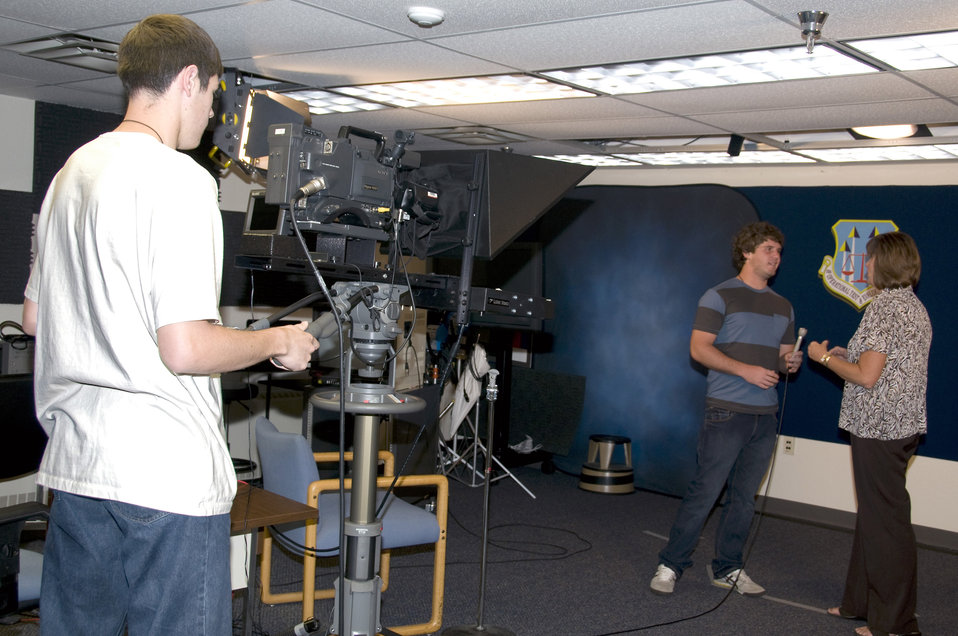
AFOTEC launches student intern program

At Kirtland Air Force Base, N.M, Air Force Operational Test and Evaluation Center student intern Ethan Halliday (left) operates the camera as Calum Murray, another student intern, practices on-camera interviewing with Public Affairs Chief Katherine Gandara.